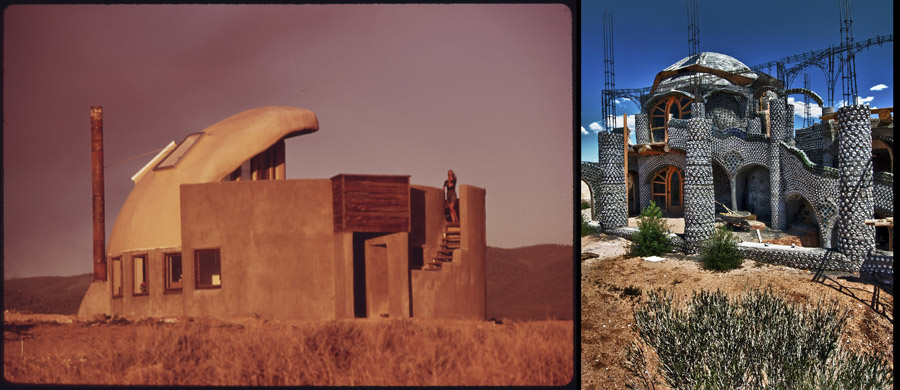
Taos, NM 'Earthships' 1972 and 2011

'Then' Documerica Photo: 1972 First Experimental House Completed near Taos, New Mexico Using Empty Steel Beer and Soft Drink Cans.' by David Hiser.
'Now' State of the Environment Photo: August, 2011 New Dome Earthship' by Dan Conlin.

David Hiser chose his areas of coverage for his DOCUMERICA assignment, intentionally picking areas familiar to him. His photographs capture the striking landscape of America's Desert Southwest.

Join in at www.flickr.com/groups/ourenvironment